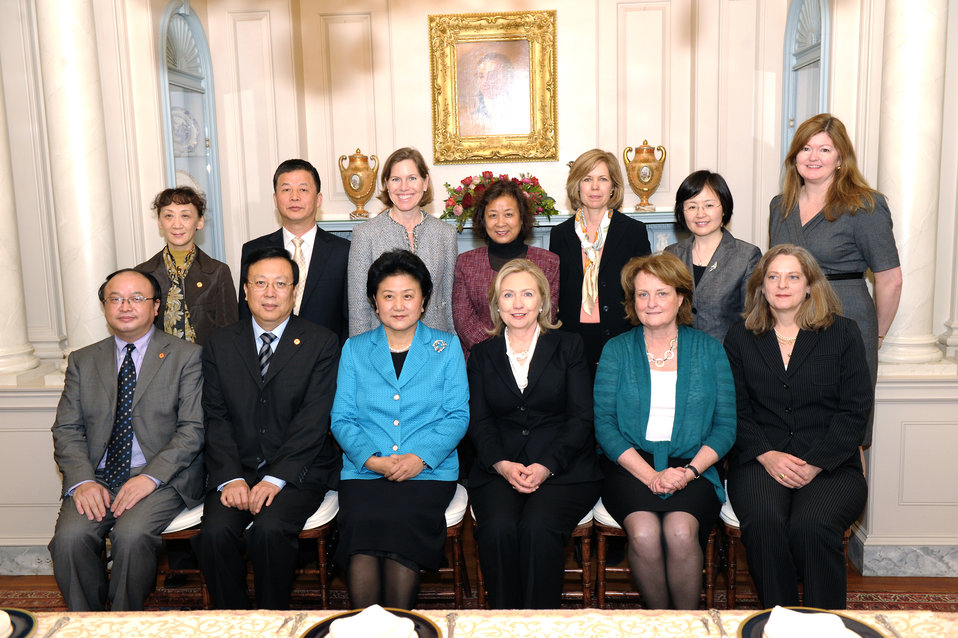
Secretary Clinton, Chinese State Councilor Liu Yandong Pose for a Photo With U.S.-China Consulation on People-to-People Exchange Delegation

U.S. Secretary of State Hillary Rodham Clinton and Chinese State Councilor Liu Yandong pose for a photo with members of the U.S.-China Consultation on People-to-People Exchange delegation, at the U.S. Department of State in Washington, D.C., on April 12, 2011.